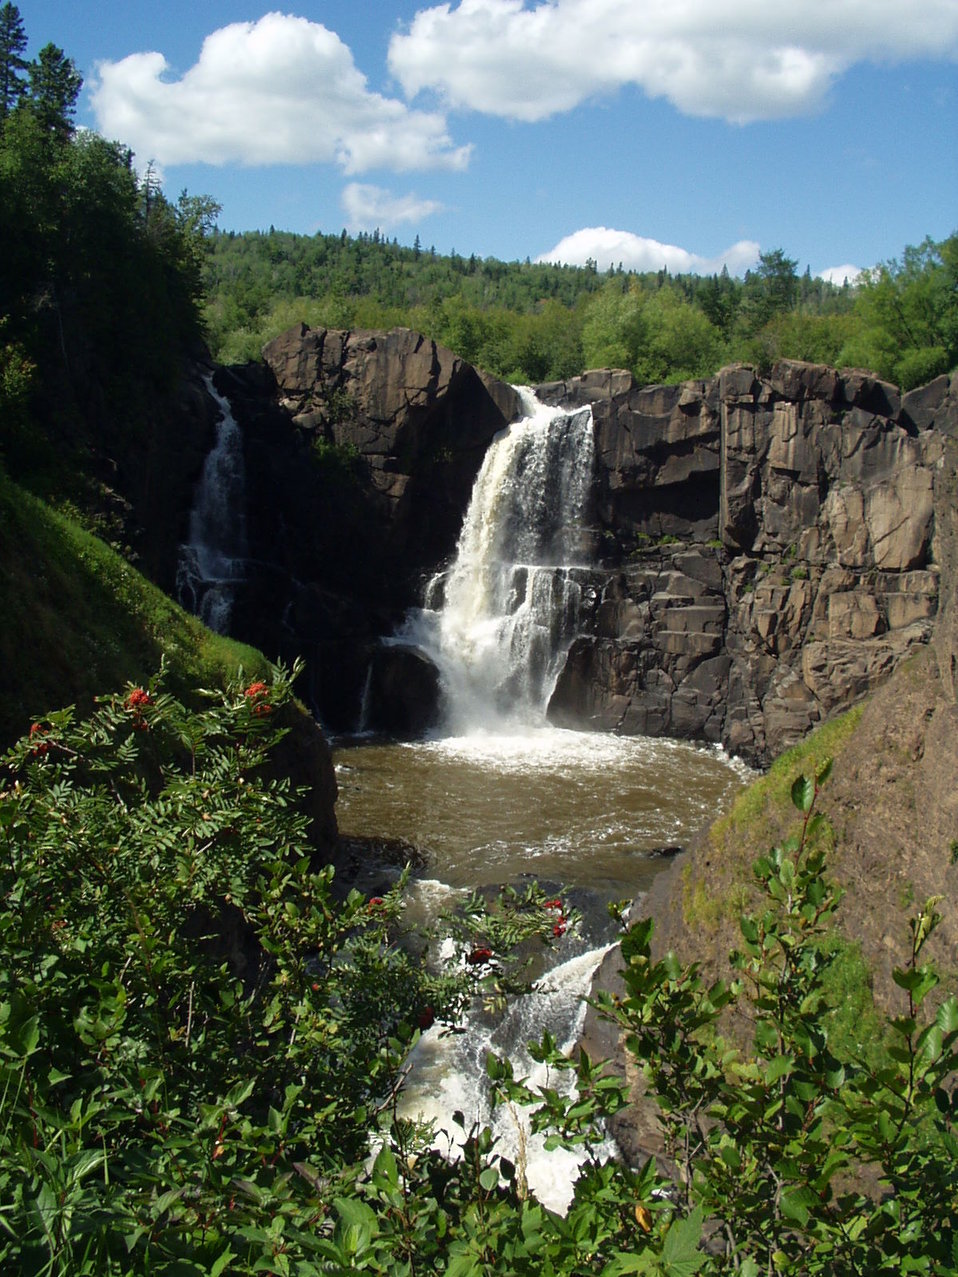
Grand Portage State Park in Minnesota. 120 foot waterfall on the Pigeon River is highest in Minnesota. en:Category:Images of Minnesota